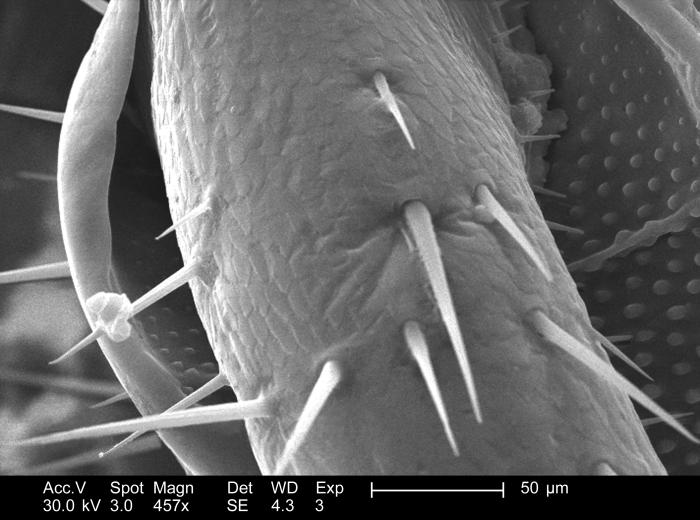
This 2005 scanning electron micrograph (SEM) depicted a region of the exoskeletal surface of a decreased roach found in a Decatur, Georgia home. At a magnification of 457x, one is able to see some of the ultrastructural details manifested in the configuration of this organism's chitinous exoskeletal covering. Note the lamellated, or layered, almost shingle-like appearance of the chitin in how it is laid down on the insects surface.